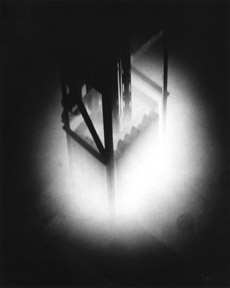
View of the Swimming Pool Reactor emanating bluish glow as it operates in pool of water in which reactor is immersed. c. 1954